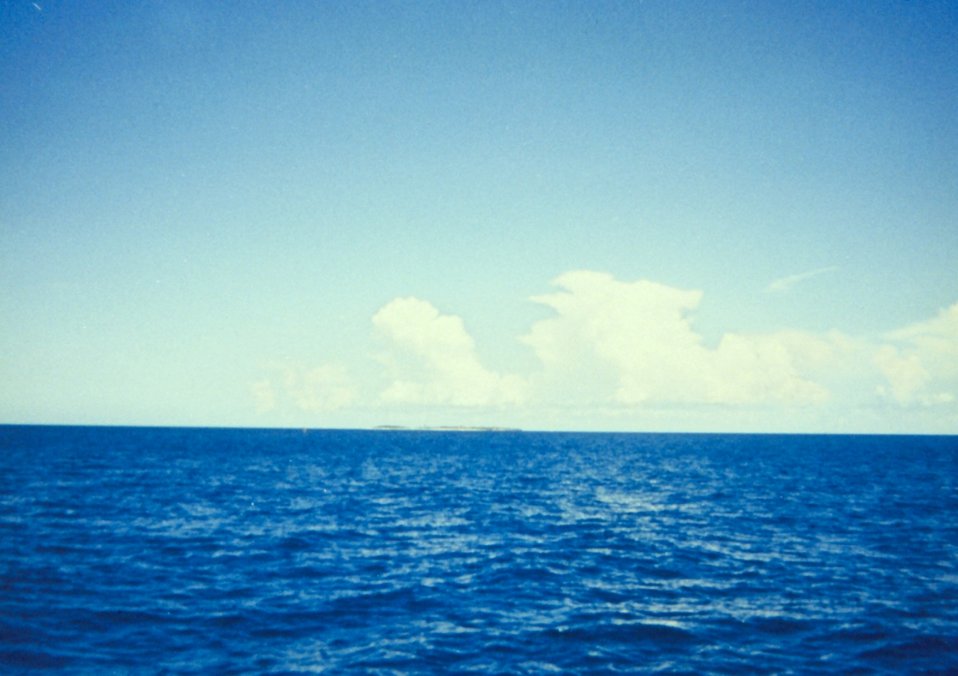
Fort Jefferson in the distance.